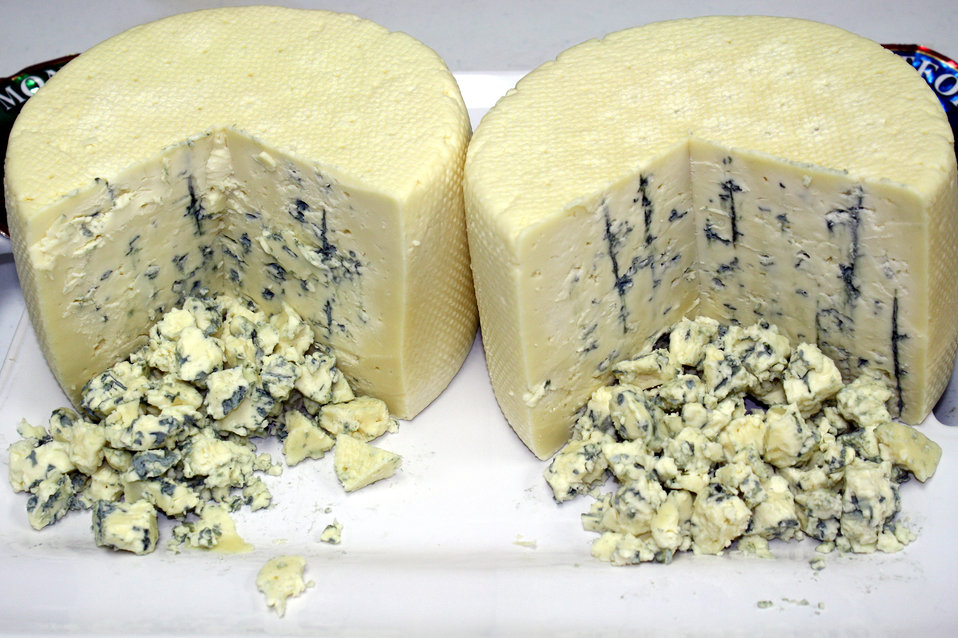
Agriculture Under Secretary for Rural Development (RD) Dallas Tonsager visited the Wisconsin Farmers Union Specialty Cheese Company in Montfort, WI on Mar. 1, 2013. The WI Farmers Union Specialty Cheese Company produces this award winning Montforte Blue Cheese.